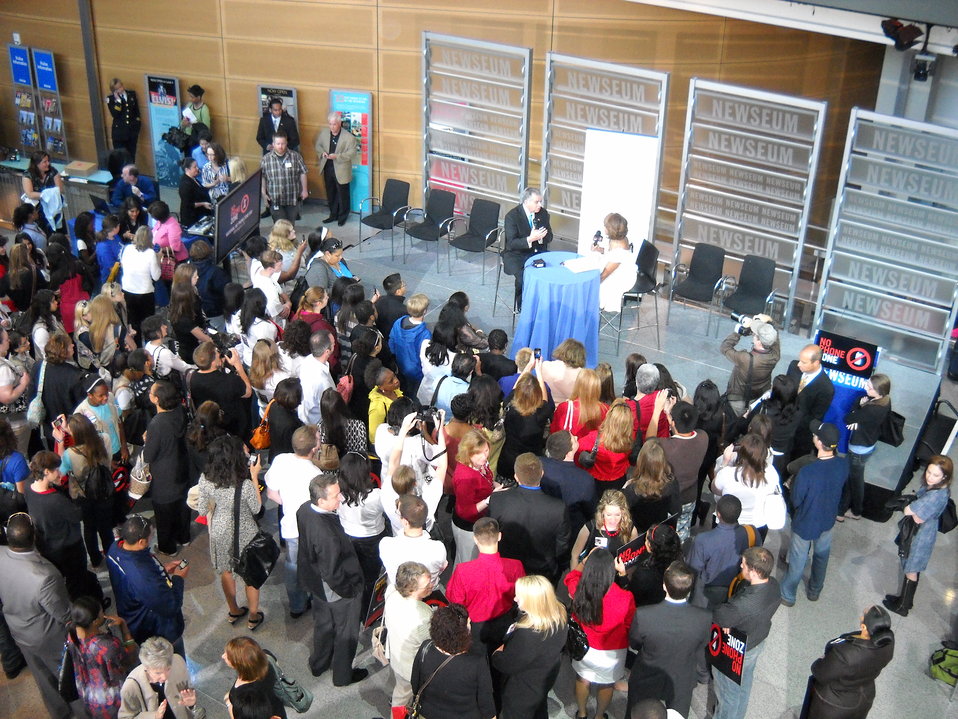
National No Phone Zone Day Newsum Washington, DC April 30, 2010 028